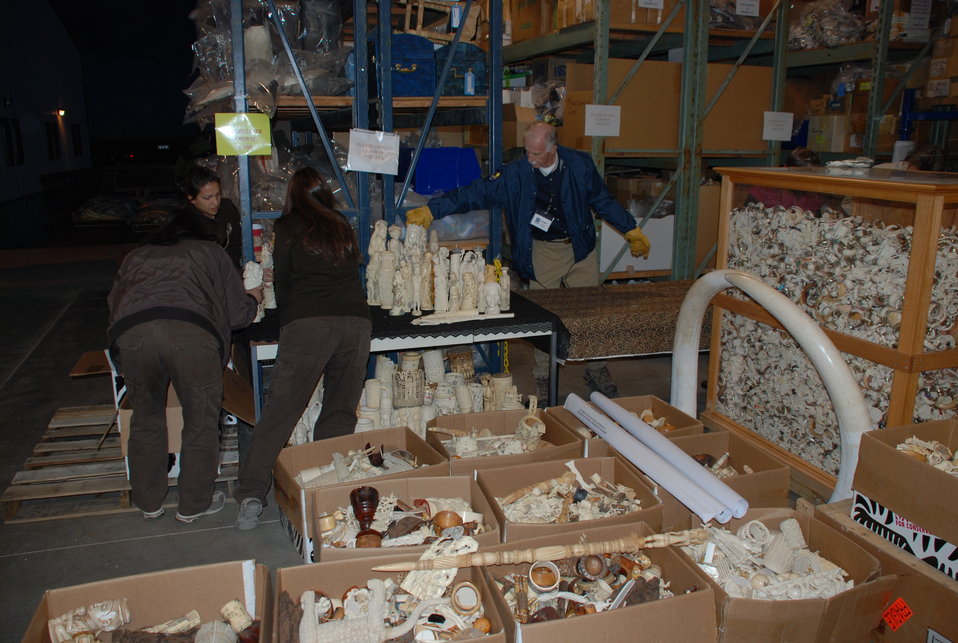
Before sunrise crews began loading ivory which FWS seized during undercover investigations of organized smuggling operations or confiscating at the U.S. border over the past 25 years.